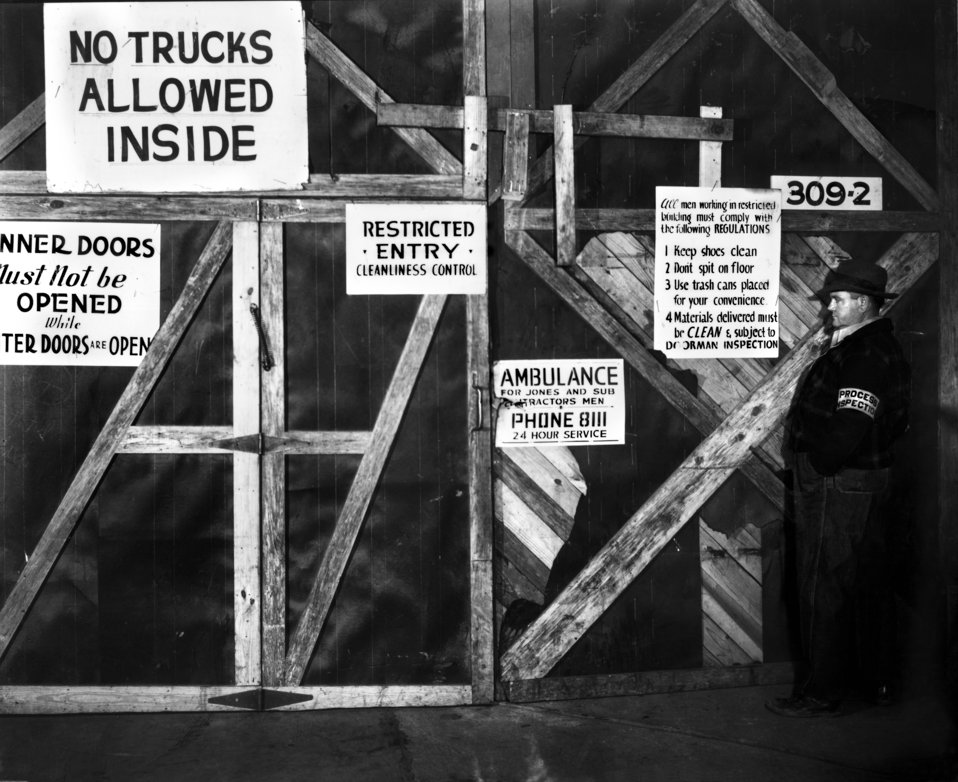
Control Entrance K-25

K-25-77 DOE photo Ed Wescott 2-1945 Oak Ridge Tennessee